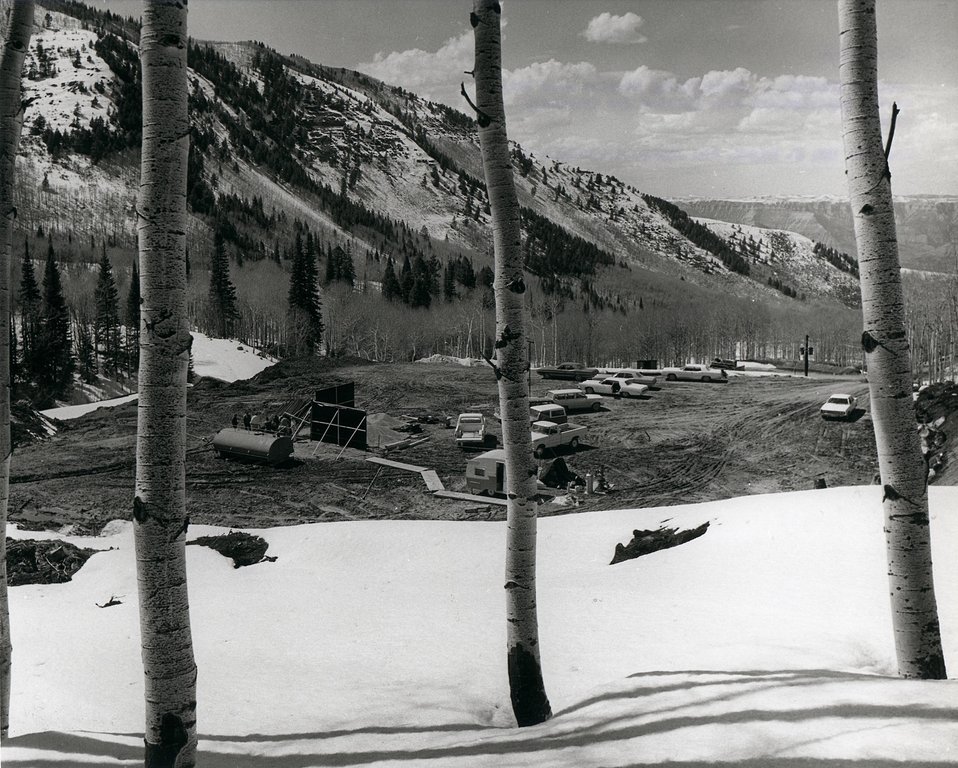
Backfilling studies were held at the experimental hole (behind the temporary walls). Circa 1959.